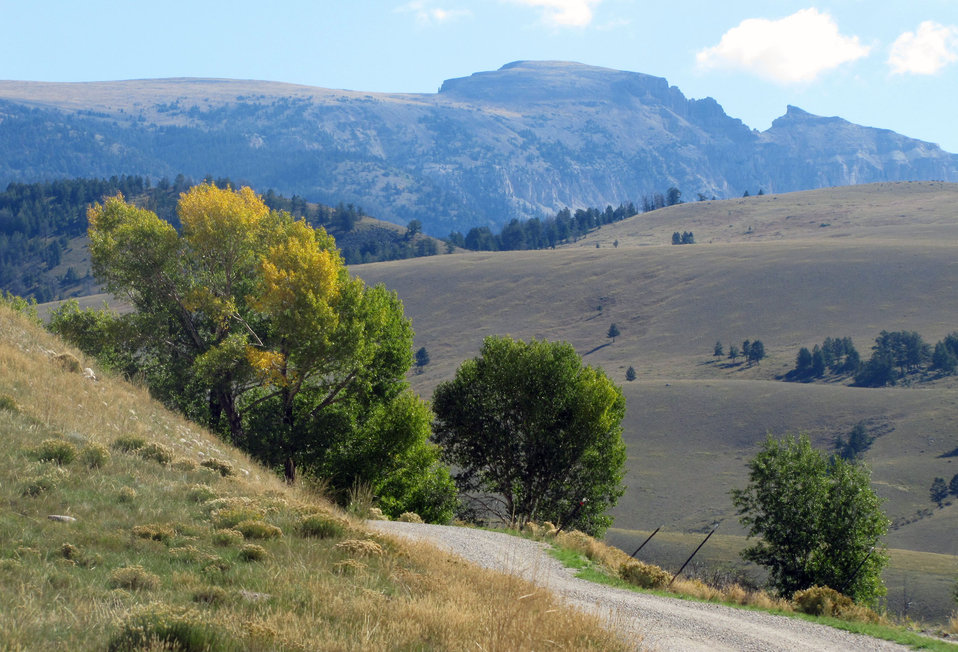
Less Than a Week

A splash of yellow in a cottonwood tree on the National Elk Refuge is a hint that the first official day of autumn is less than one week away.

Lori Iverson / USFWS